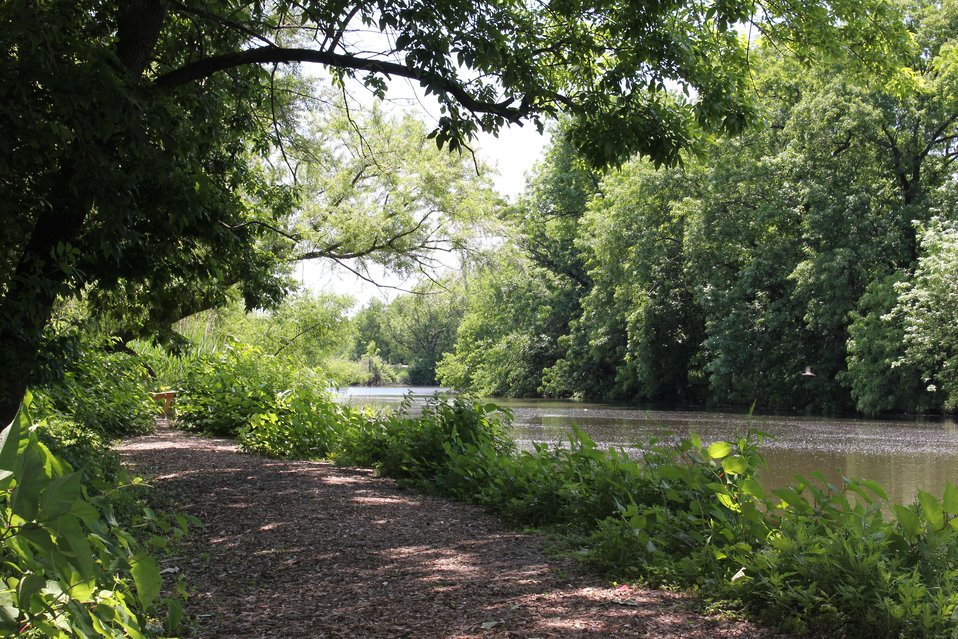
John Heinz National Wildlife Refuge

A trail follows Darby Creek at John Heinz National Wildlife Refuge at Tinicum in Philadelphia.